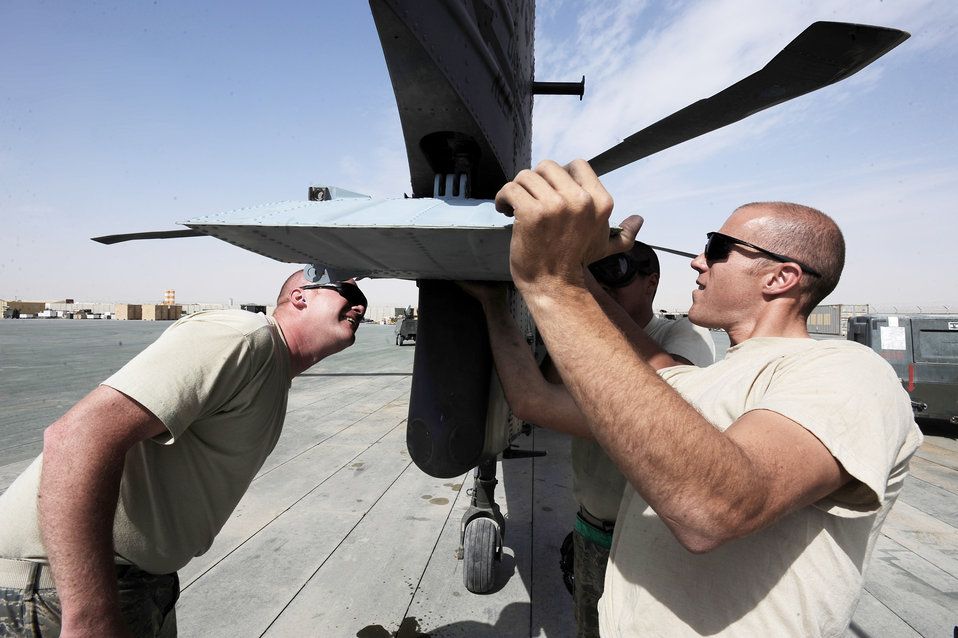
Maintenance Airmen ensure rescue missions save lives

Left to right, Staff Sgts. Greg Enberlin, Ryan Click and Senior Airman Robert Fabela, HH-60G Pave Hawk crew chiefs assigned to the 451st Expeditionary Aircraft Maintenance Squadron helicopter maintenance unit, install a stabalator on a back-up HH-60G helicopter April, 16, 2010, at Camp Bastion, Afghanistan. The maintenance Airmen, who have witnessed as many as 26 sorties here in one day, spend an average of 168 man-hours a week to ensure rescue aircrews are ready to fly when called.